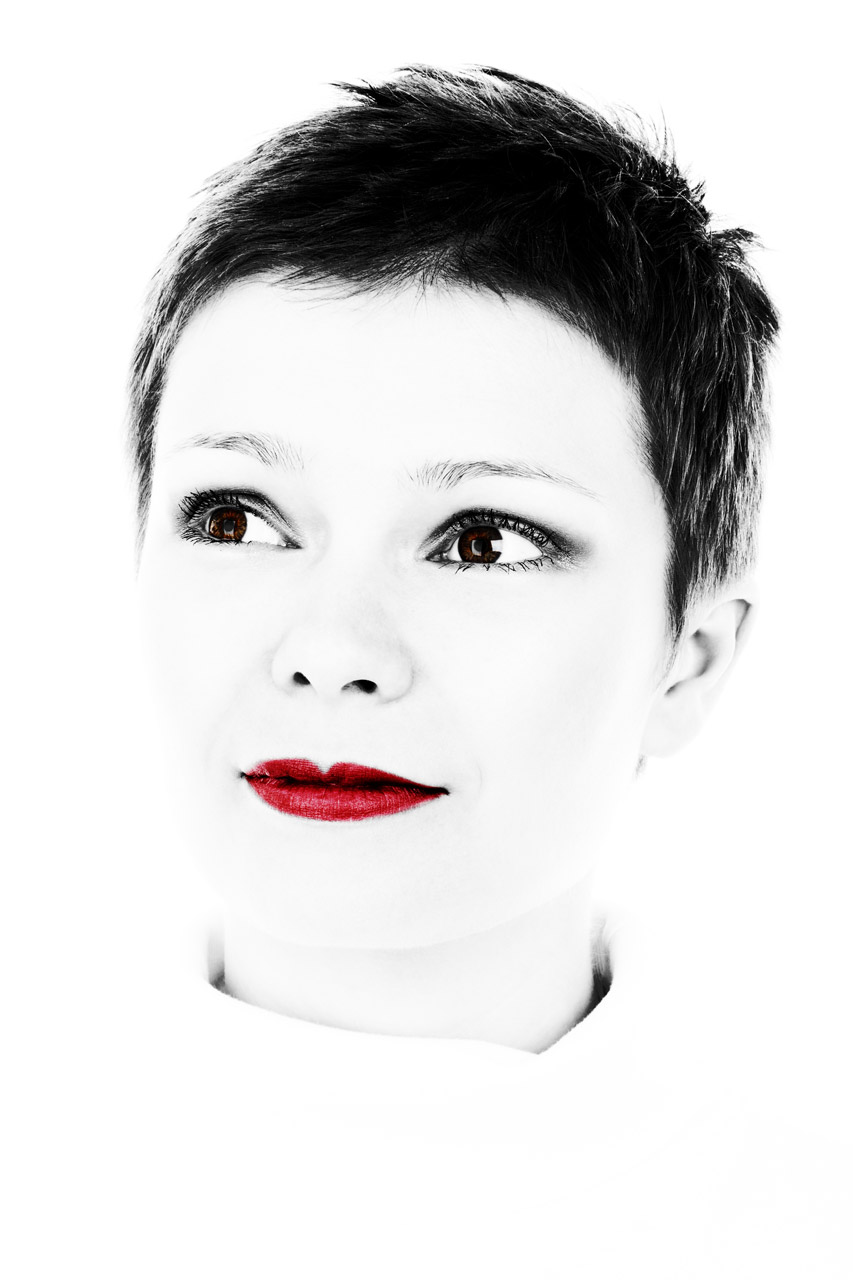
Red lipstick portrait

High-key portrait of a young woman with red lipstick - jana svojsova.